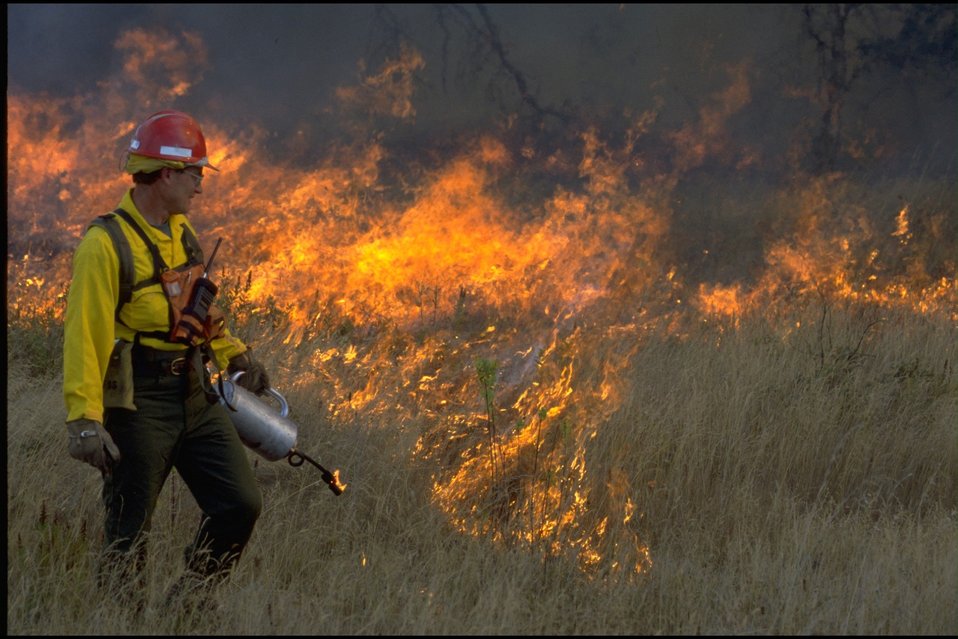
Danebo Plots burn, Wetlands (Dave Schroeder).